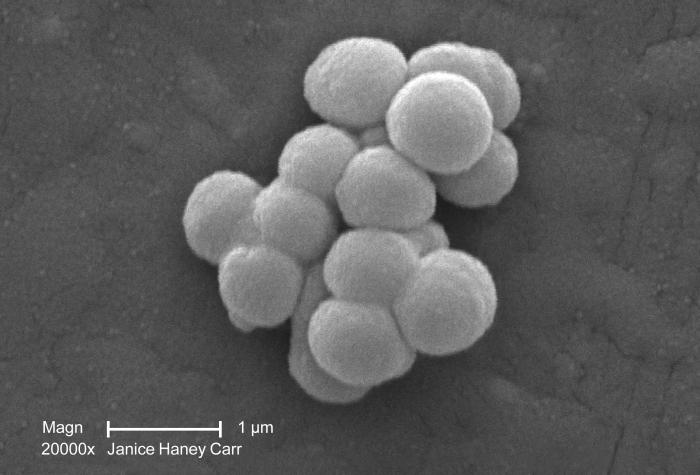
Under a high magnification of 20,000X, this scanning electron micrograph (SEM) revealed a small clustered group of Gram-positive, beta-hemolytic Group C Streptococcus sp. bacteria. See PHIL 10586 for a colorized version of this image.